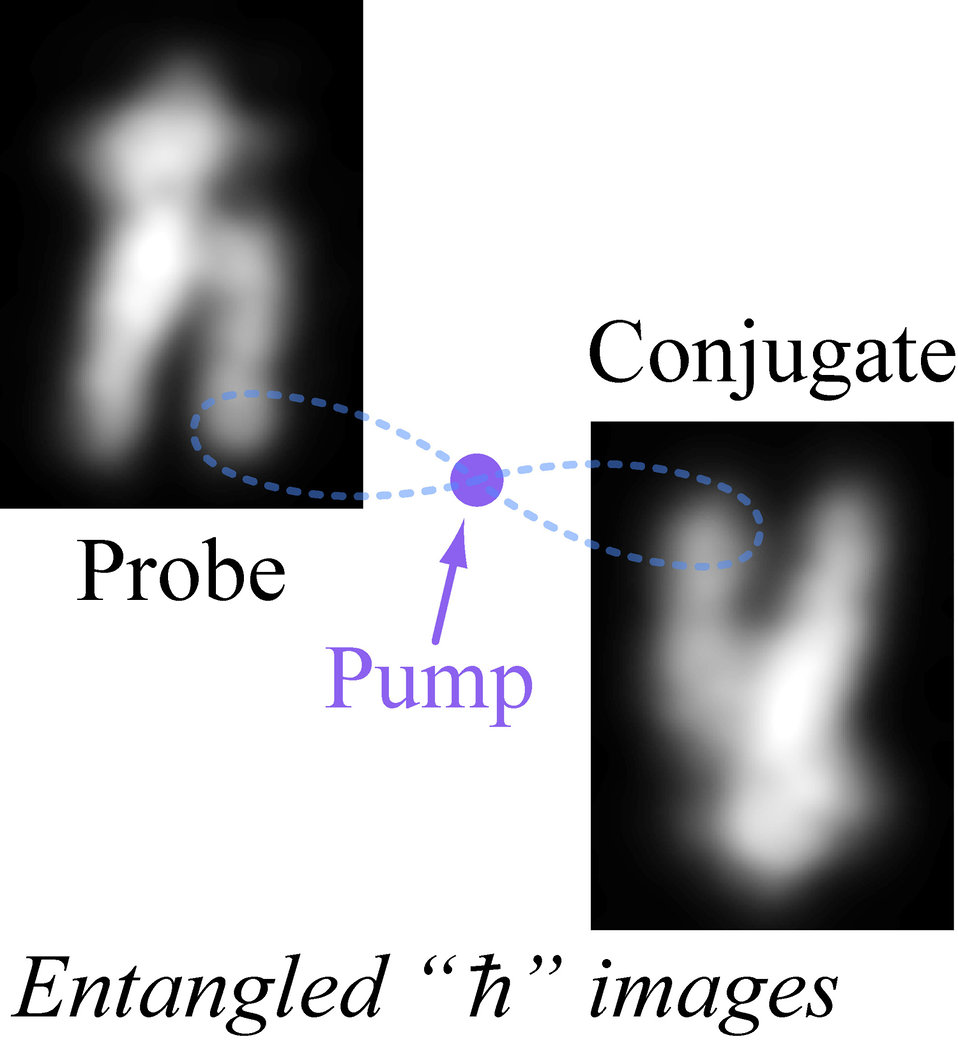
Quantum images

Closeup of two 'quantum images' created with the help of a 'pump' laser beam. The two images are 'entangled,' so that if there is a change in the intensity in one region ('pixel') of the image, there would be an identical change in the intensity in the corresponding pixel in the second image. In this experiment, one of the images is delayed on its arrival to a detector, so that the correlations between the two images can be out of sync by up to 27 nanoseconds, something that is potentially useful for managing data to a future 'quantum computer.'